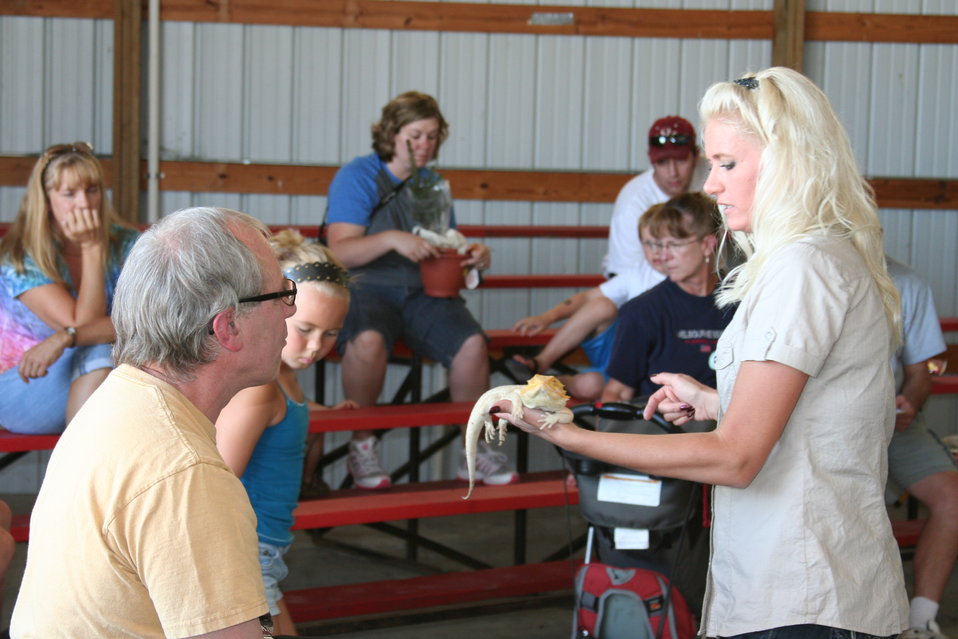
2011 Huron Prairie Fest